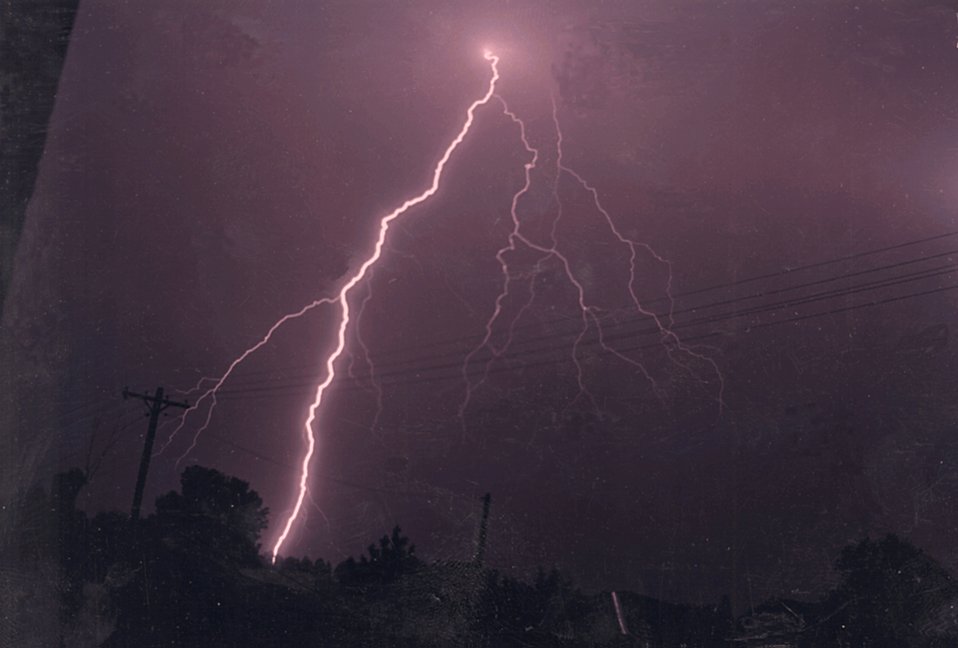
Many of Mr. Lear's lightning photographs are taken from the roof of his home. He has an array of six cameras that can be activated simultaneously in order to capture lightning images. These six cameras span the horizon. Mr. Lear is a welder by trade and has taken lightning photographs for many years as a hobby.